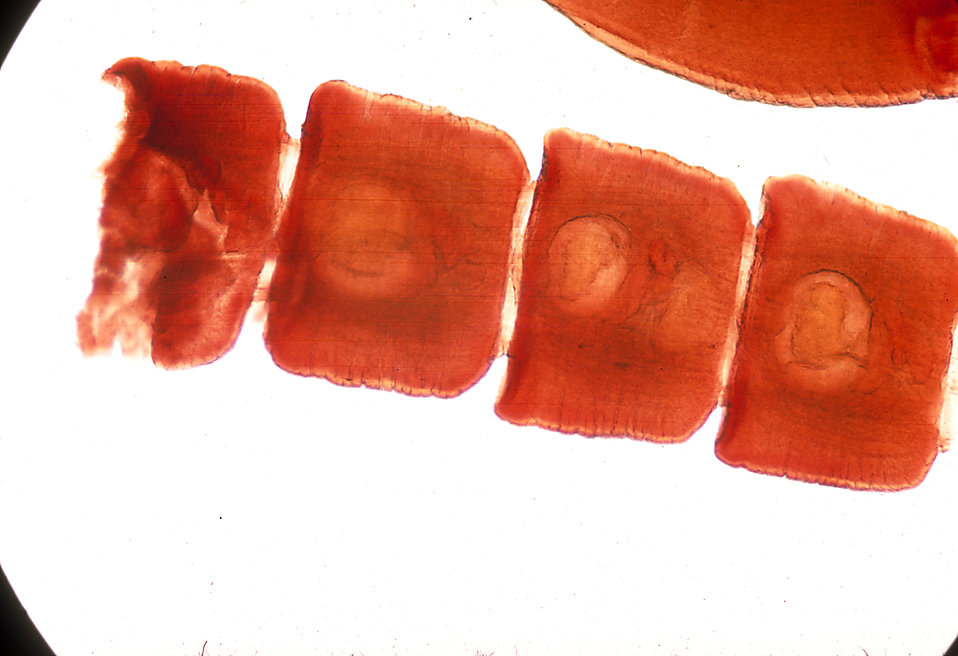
These are immature proglottids from the tapeworm, Mesocestoides variabilis, taken from an 18 month old child.